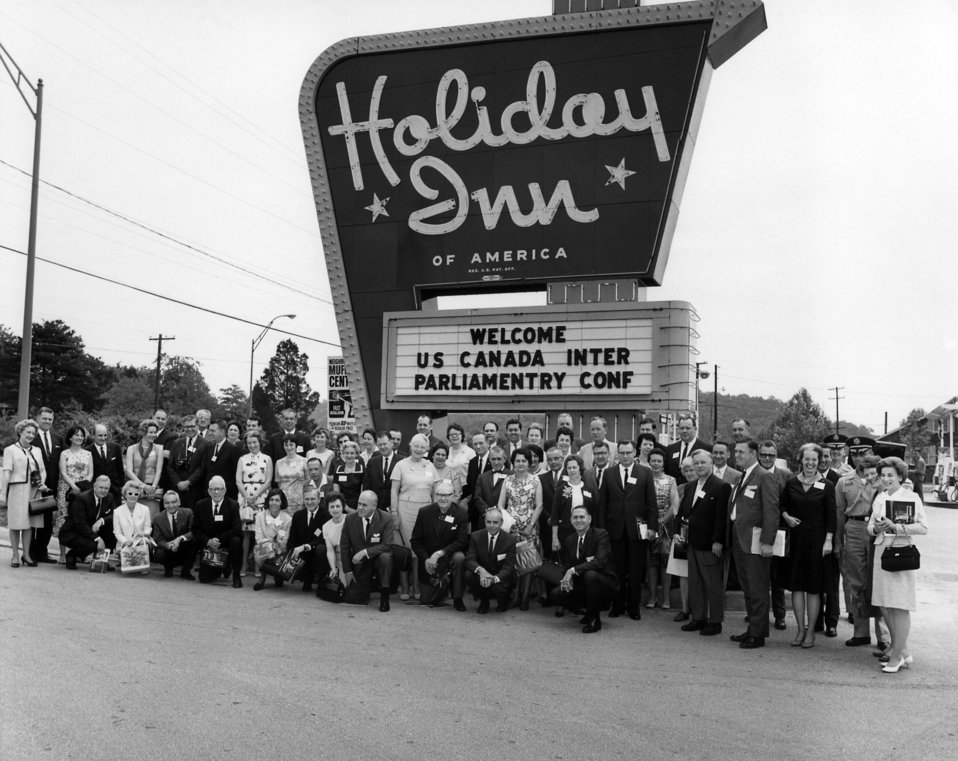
U.S. Canadian Interporlemtory Meeting Oak Ridge

66-0194 DOE photo by Ed Westcott
U.S. Canadian Interporlemtory Meeting Oak Ridge Tennessee 5-20-1966